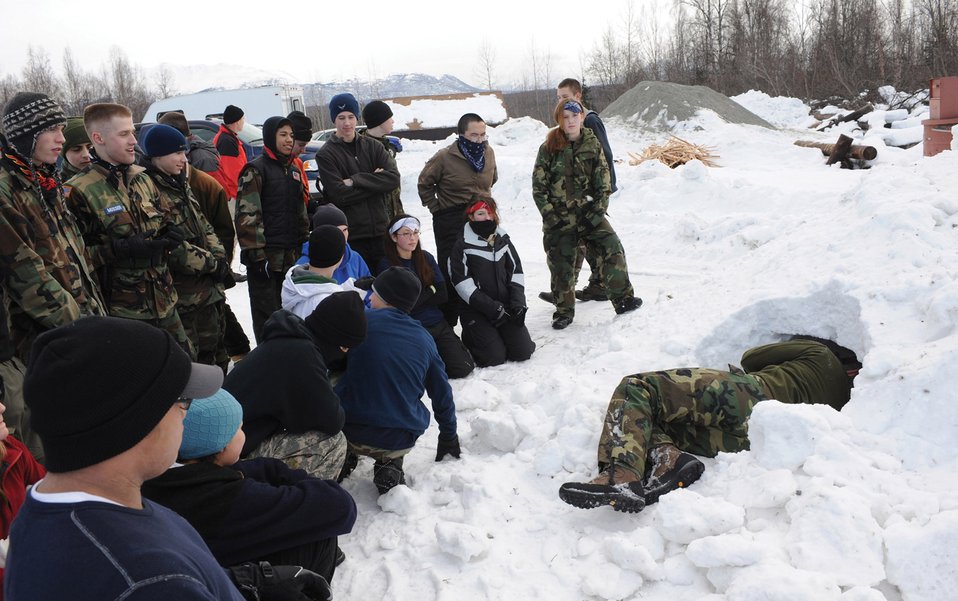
Cadets recieve cold-weather training in Alaska

Staff Sgt. Marc Richard instructs Junior ROTC cadets from Eagle River and West High Schools on how to build a snow shelter Feb. 29 near Upper Otter Lake in Alaska. Sergeant Richard explained the technique of safely building a snow shelter during extreme cold weather. Sergeant Richard is with Det. 1of the 353rd Combat Training Squadron.